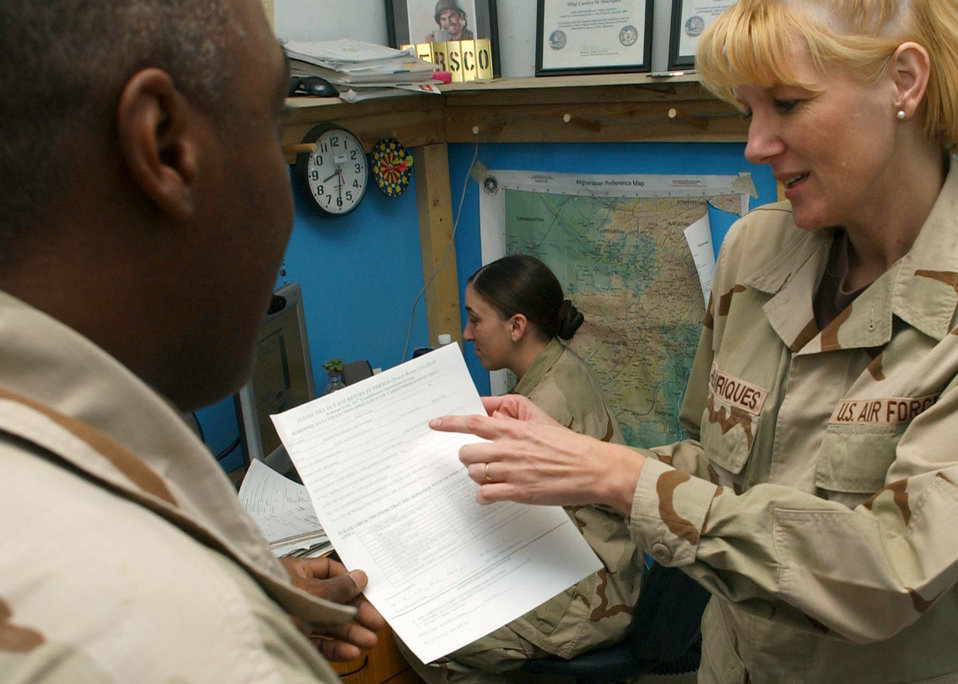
Combat personnelists get Airmen in, out

BAGRAM AIR BASE, Afghanistan -- Master Sgt. Carolyn Henriques helps a customer with paperwork while Airman 1st Class Angelique Smith enters deployment data on newly-arrived Airmen to the 455th Air Expeditionary Wing here. The two-person Personnel Support for Contingency Operations team is deployed from Pope Air Force Base, N.C., supporting Operation Enduring Freedom.